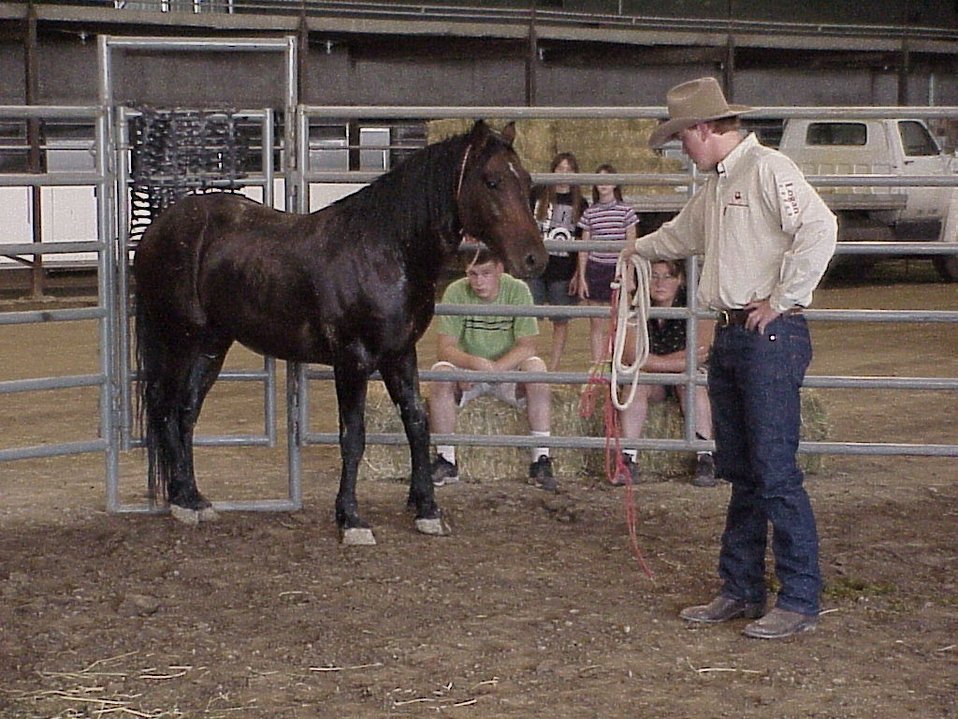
Horse Gentler Mario Johnson Lewiston Wild Horse and Burro Adoption Program Auction WHB indoor auction Cottonwood Field Office UCSC Upper Columbia Salmon Clearwater District